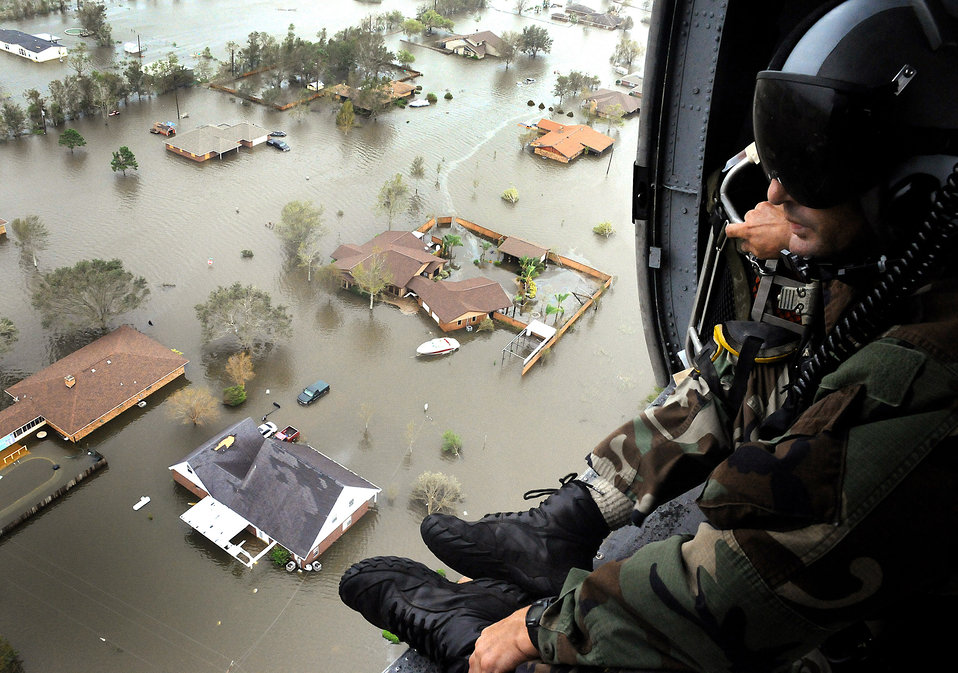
Rescue team pulls seventeen from floodwaters

An Air Force Reserve pararescueman assigned to the 331st Air Expeditionary Group scans the ravaged Texas landscape for signs of life in the aftermath of Hurricane Ike. Deployed from the 920th Rescue Wing at Patrick Air Force Base, Fla., the pararescuemen, along with aircrews, two HH-60G Pave Hawk helicopters and two HC-130P/N refueling aircraft, rescued 17 people from the small Texas town of Nederland Sept. 13.